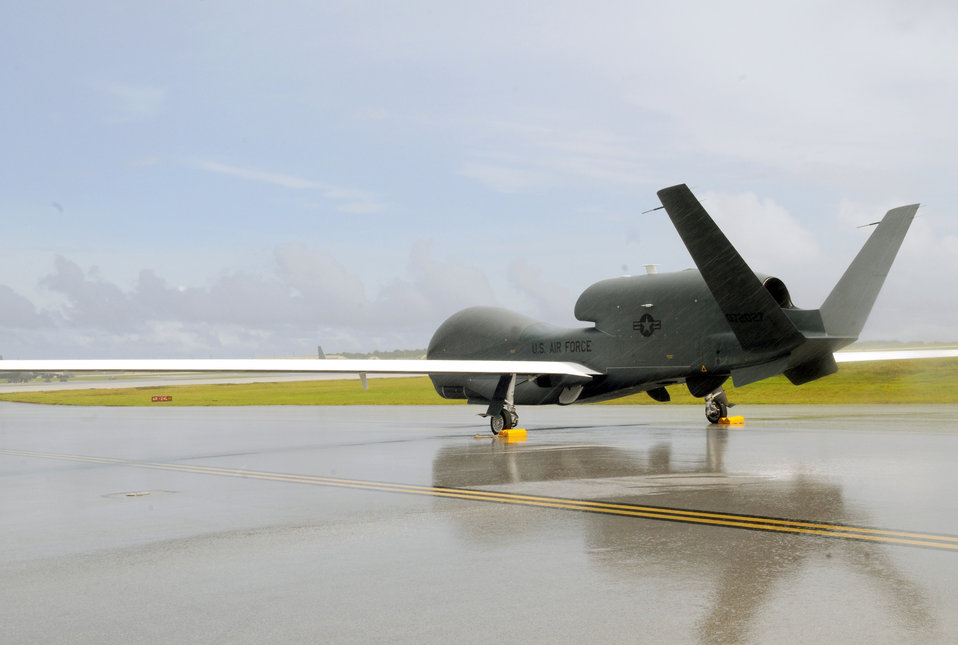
Air Force utilizes Global Hawk to support Japan relief efforts

An RQ-4 Global Hawk like the one pictured is being used to assist Japan in disaster relief and recovery efforts.